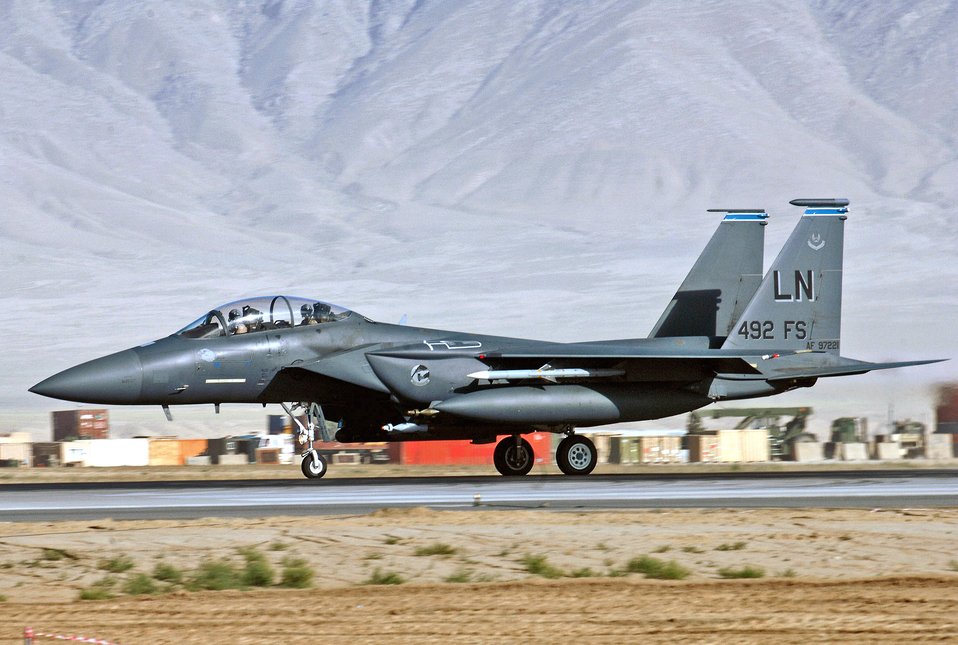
Airpower summary for Aug. 1, 2007

An F-15E Strike Eagle assigned to the 492nd Expeditionary Fighter Squadron takes off from Bagram Air Base, Afghanistan. The 492nd EFS is deployed from Royal Air Force Lakenheath, England. F-15Es fly close-air-support missions for Operation Enduring Freedom and contributed to 37 coalition sorties over Afghanistan Aug. 1.